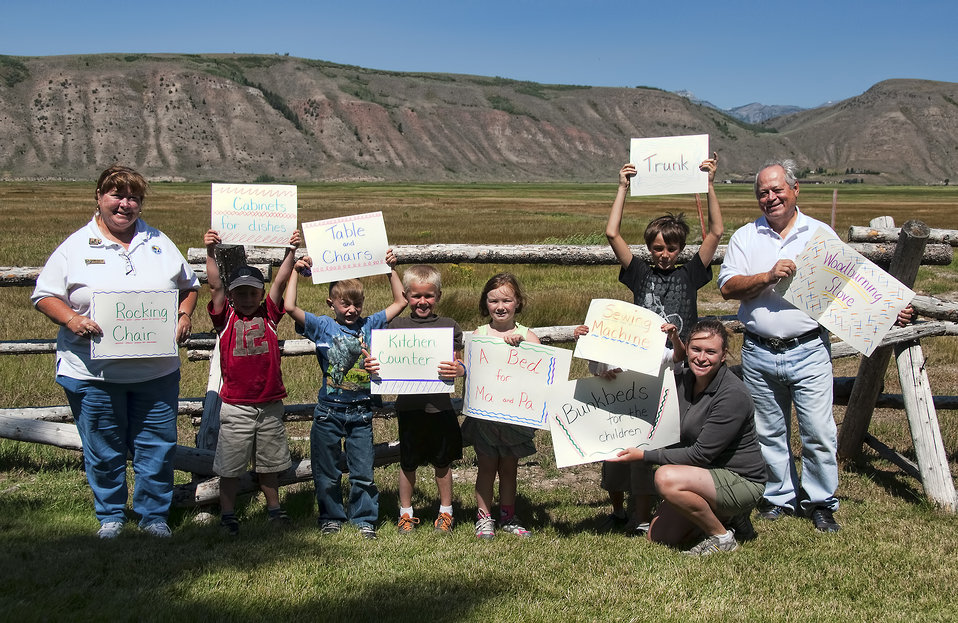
All My Worldly Belongings

Students hold up cards representing various furnishings which they placed in an area roped off by Refuge volunteers. The designated spaced represented the small size of a typical homestead.

Credit: USFWS / BJ Baker, National Elk Refuge volunteer